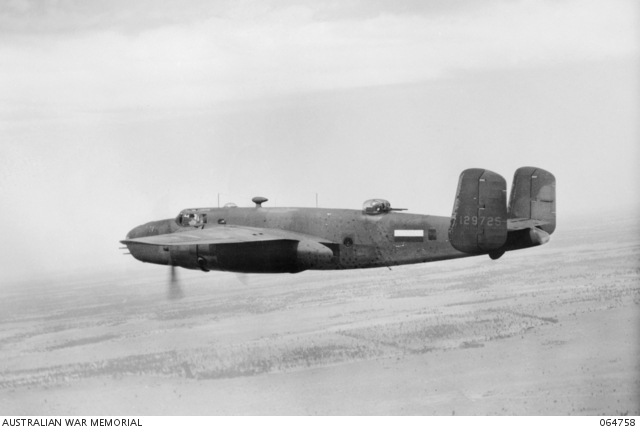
Australia. 1944-02-14. A Mitchell B25 bomber aircraft of No 18 Squadron, the composite RAAF Netherlands East Indies squadron, on its way south after two years active service in the South West Pacific Area. Nederlands: Australië. EenMitchel B25 bommenwerper van het 18e squadron, met aanduidingen van het Nederlands Indië Squadron, op weg na twee jaar actieve dienst in de zuidwestelijke Pacific